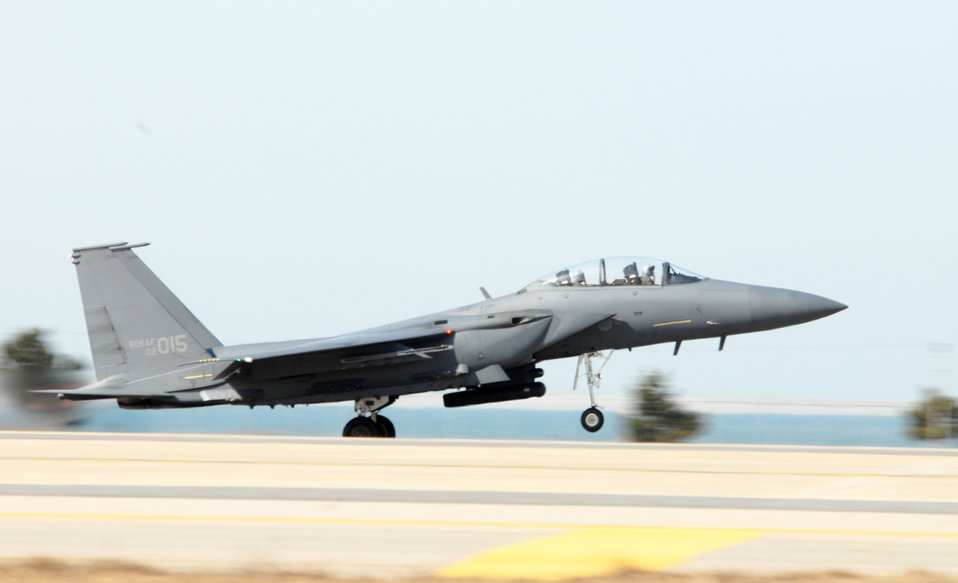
Buddy Wing brings Kunsan, South Korean airmen closer

An F-15K Slam Eagle, Republic of Korea Air Forces', 11th A South Korean air force F-15K Slam Eagle from the 11th Tactical Fighter Wing takes off while participating in the Buddy Wing Exercise March 10 at Kunsan Air Base, South Korea. Members of the 8th Fighter Wing and 11th TFW are participating to practice and enhance combined air operations.